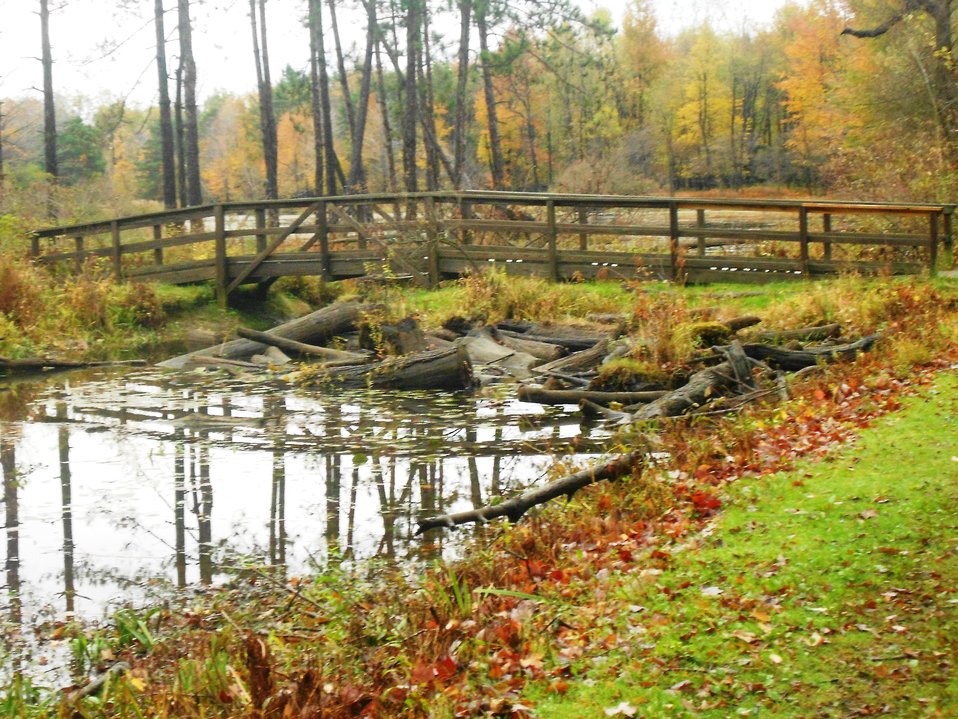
Trail bridge at Reinstein Woods Nature Preserve

A trail bridge amidst autumn colors